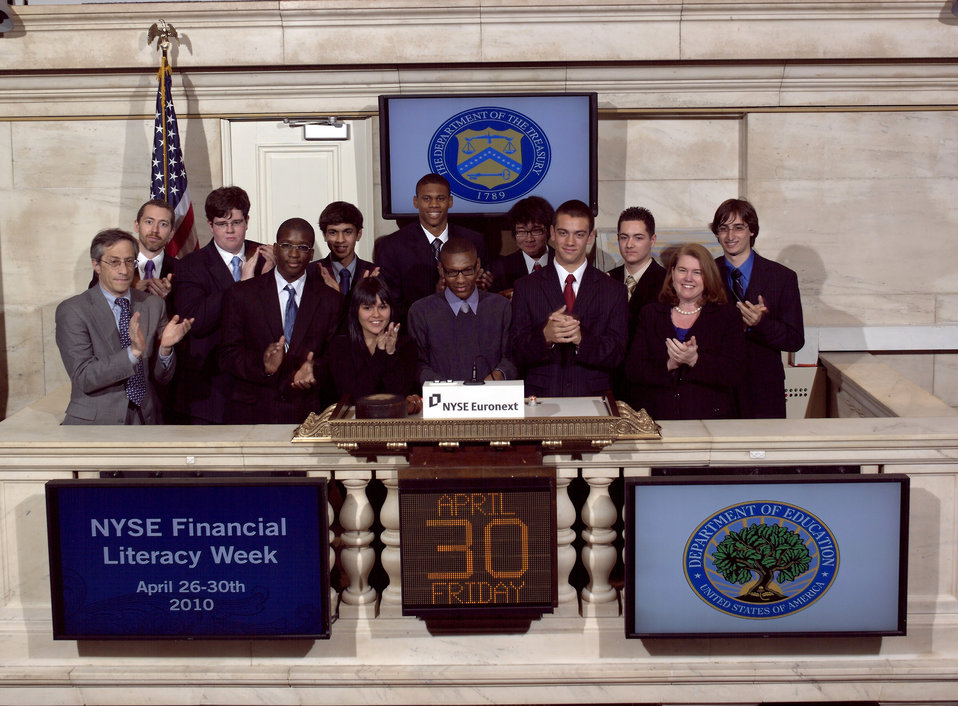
New York Stock Exchange, 4/30/2010

On April 30, 2010, students and educators who participated in the Obama Administration’s National Financial Capability Challenge visited the New York Stock Exchange (NYSE) to tour the facility and ring The Closing Bell. Today’s visit was part of the Administration’s ongoing activity during National Financial Literacy Month and follows an event earlier this week in which Treasury Secretary Tim Geithner and Education Secretary Arne Duncan honored the outstanding achievement of many of the participating students in a recognition event at the Treasury Department.